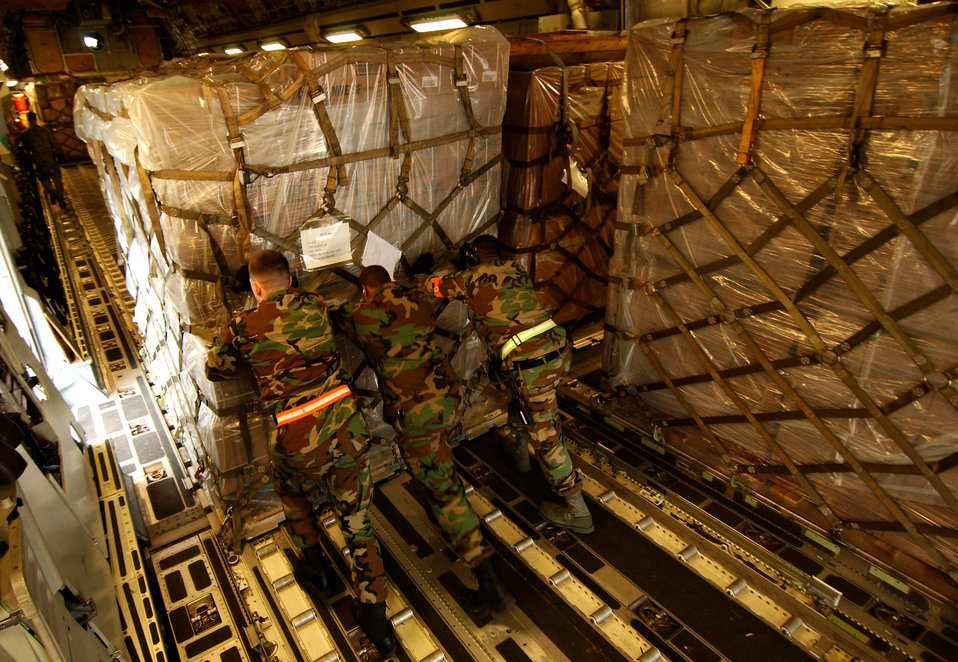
Airmen provide relief to China

Airmen from the 733rd Air Mobility Squadron load cargo onto a C-17 Globemaster III from Elmendorf Air Force Base, Alaska, Feb. 8 at Kadena Air Base, Japan. The 733rd AMS loaded medical supplies, food rations and cold weather gear onto this C-17 and another from Hickam Air Force Base, Hawaii, bound for China. Recently, 19 Chinese provinces experienced the most severe winter storms in 50 years, imposing severe hardships on millions of Chinese citizens. U.S. Pacific Command coordinated the delivery of the humanitarian supplies to People's Liberation Army at Shanghai International Airport, China.